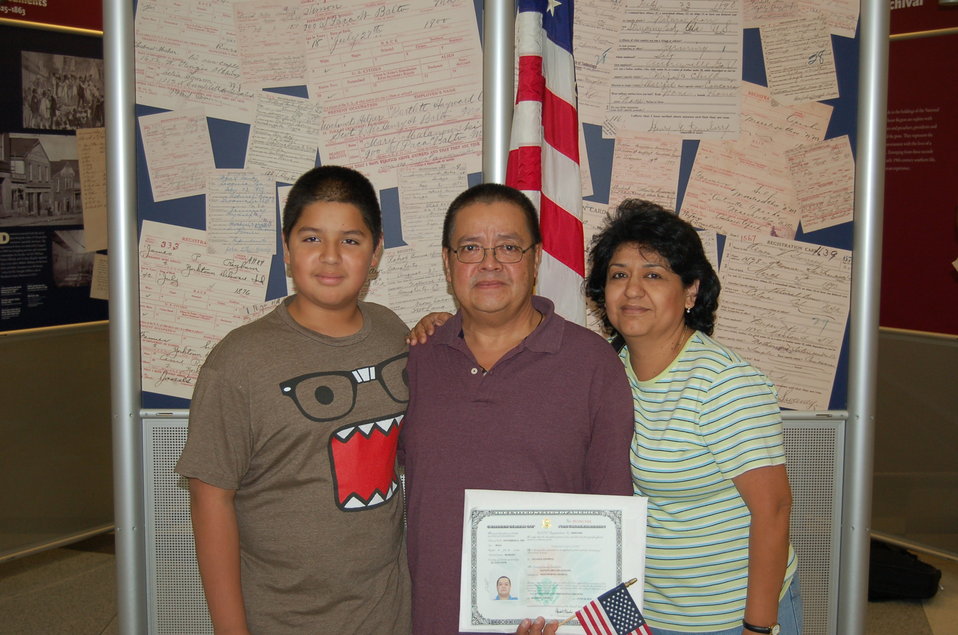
New Citizens